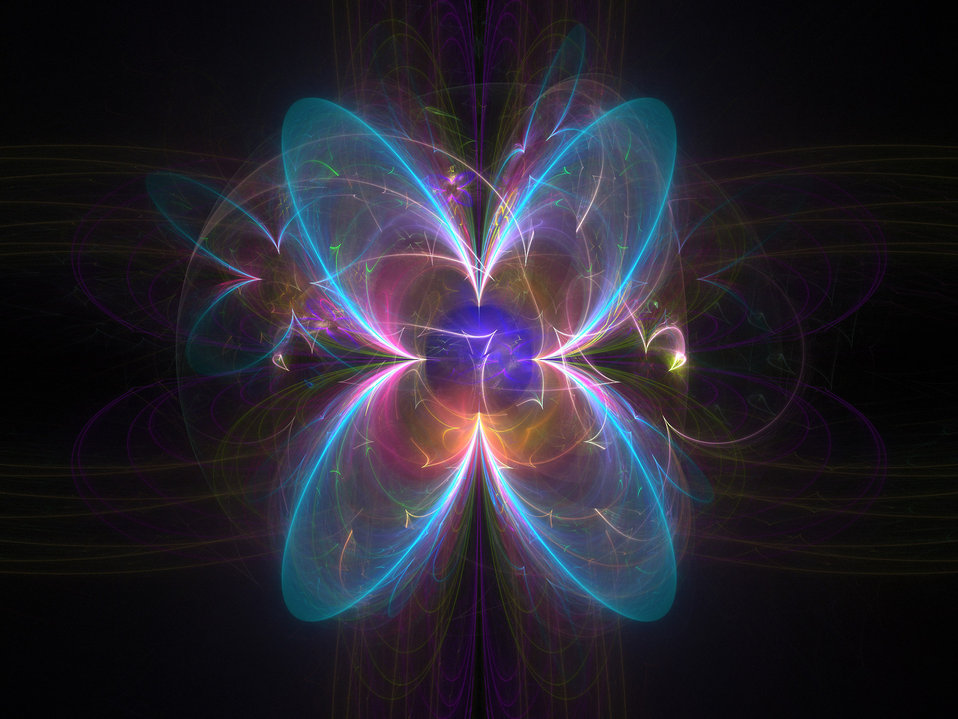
Blue circle

Fractal in various colours.